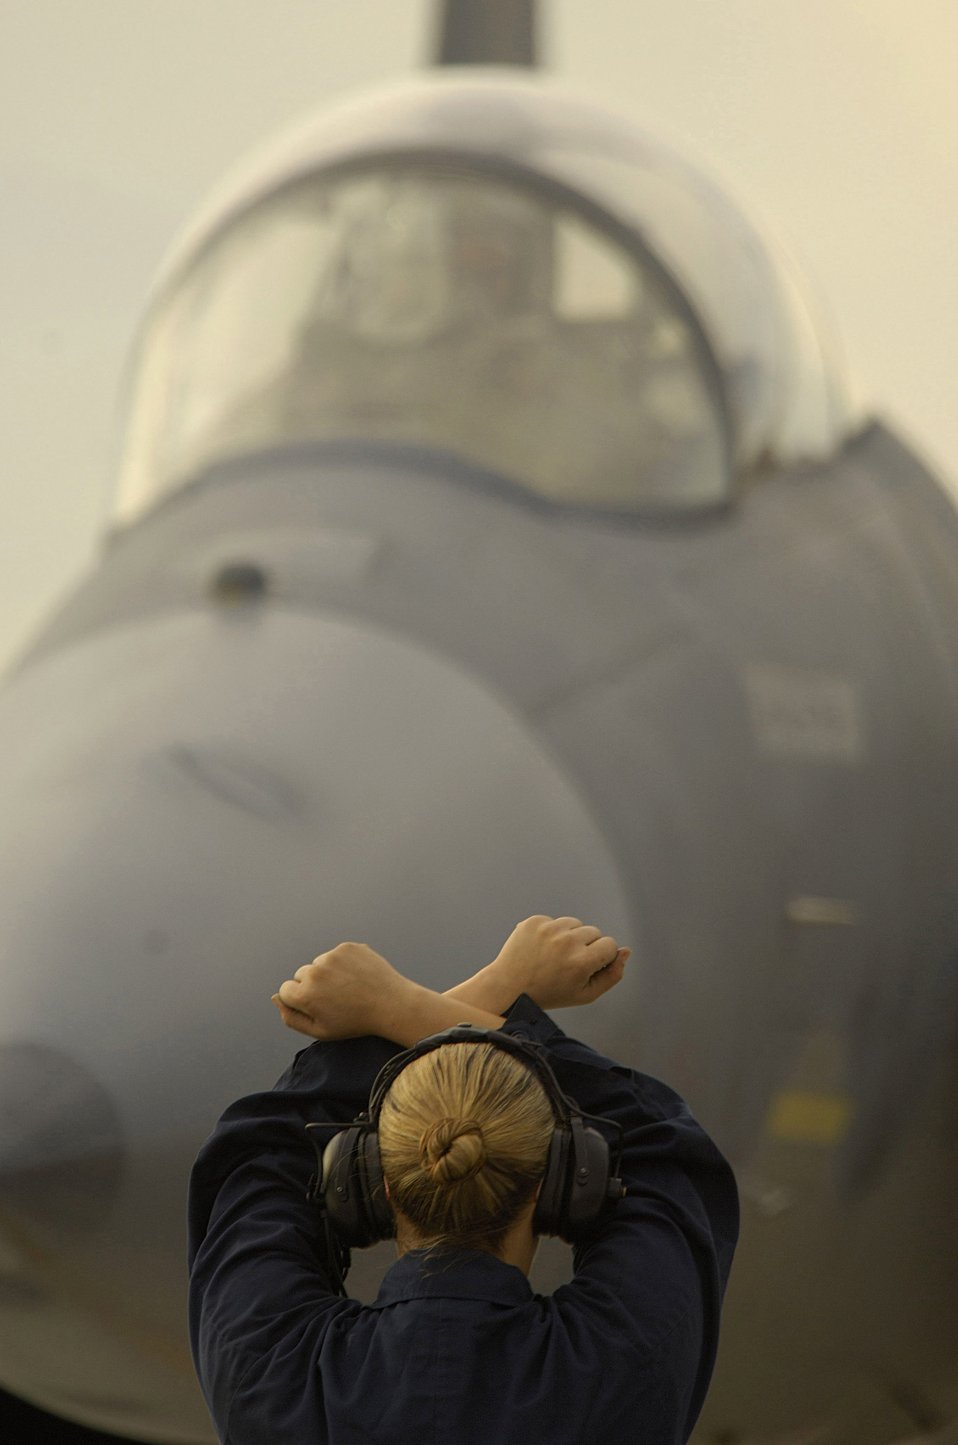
Ready to launch

Staff Sgt. Elizabeth Harding waits for a signal from Capt. Glenn Gonzales that he is ready to taxi his F-15 Eagle Jan. 9. After a month-long stand-down, the 71st Fighter Squadron at Langley Air Force Base, Va., launched the first of its F-15C fleet Jan. 9 at 9:30 a.m.